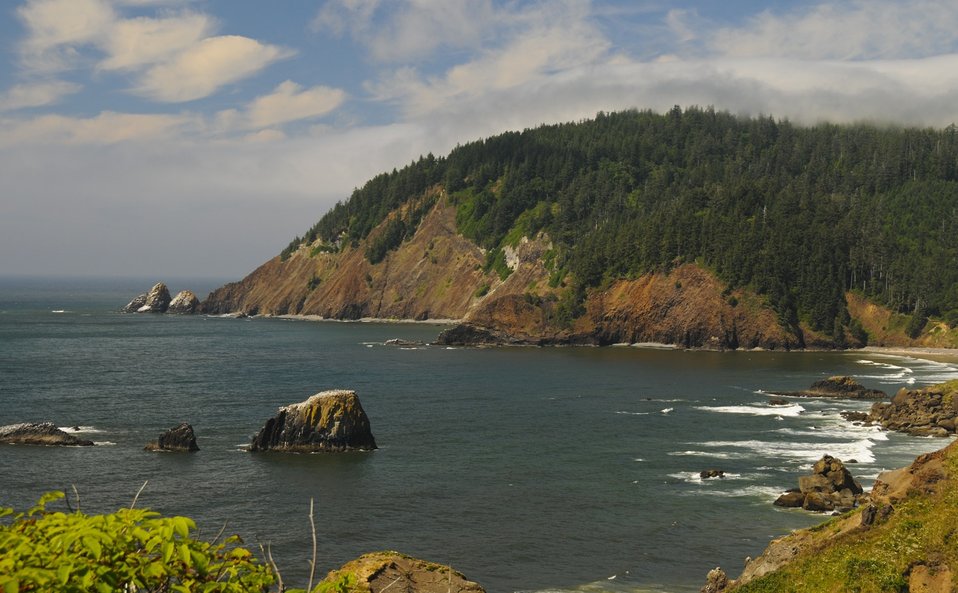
Tillamook Head and Oregon Islands National Wildlife Refuge.